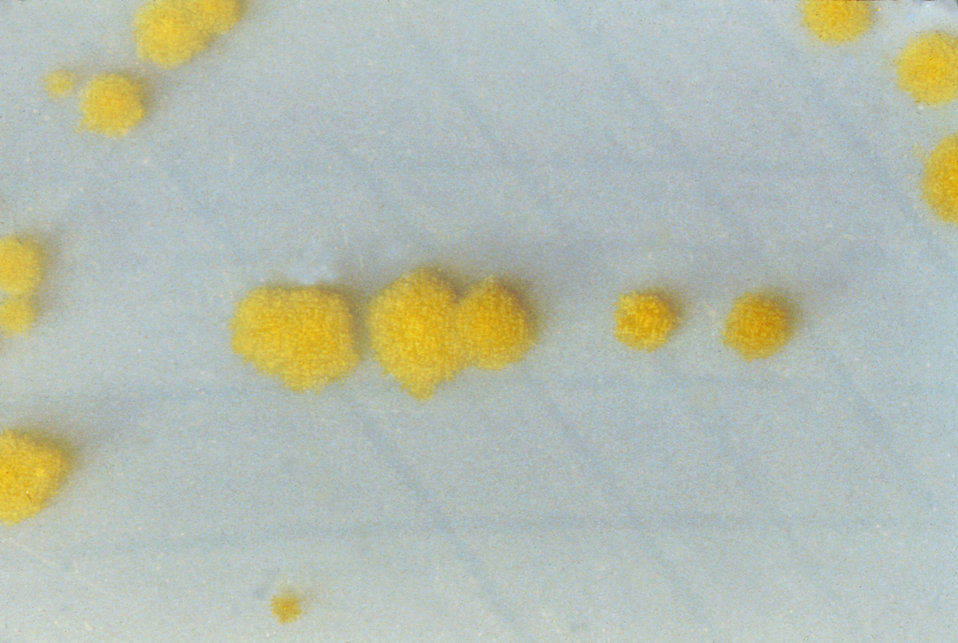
This is an image of Clostridium difficile colonies grown on cycloserine mannitol agar after 48 hours.